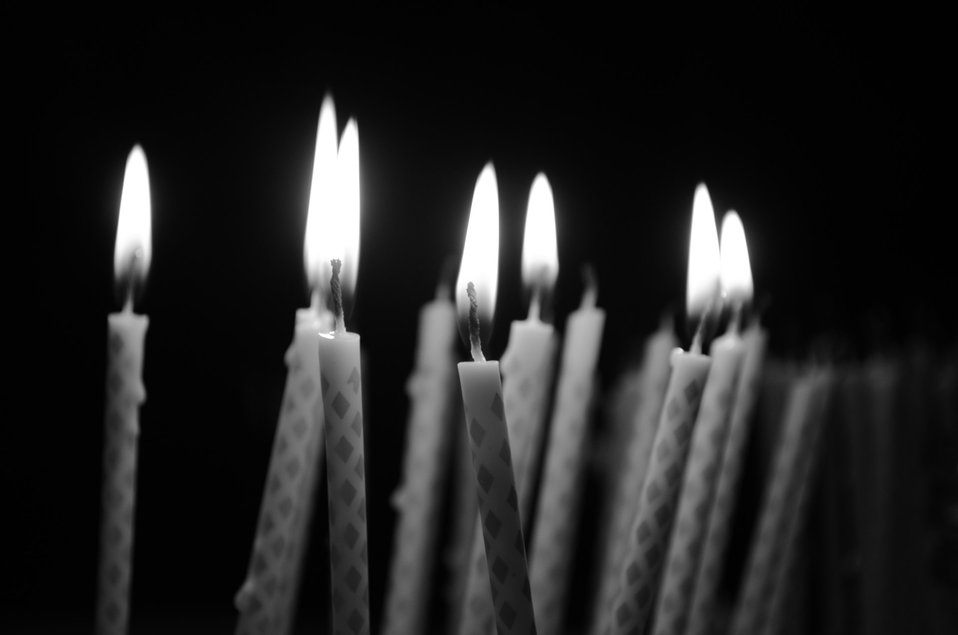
Birthday candles.